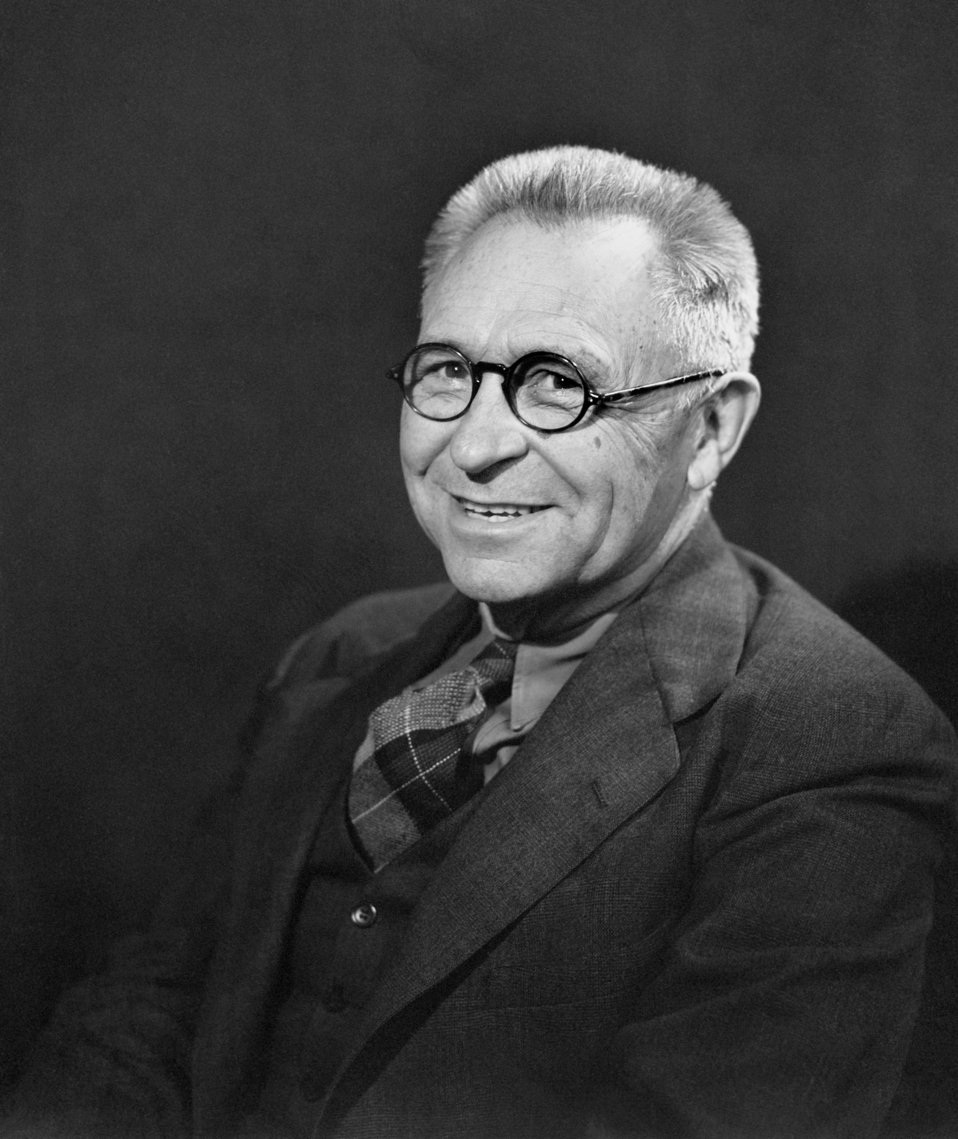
Mr. Spees Oak Ridge 1947

3288-3 DOE photo Ed Westcott 2-10-1947 Oak Ridge Tennessee